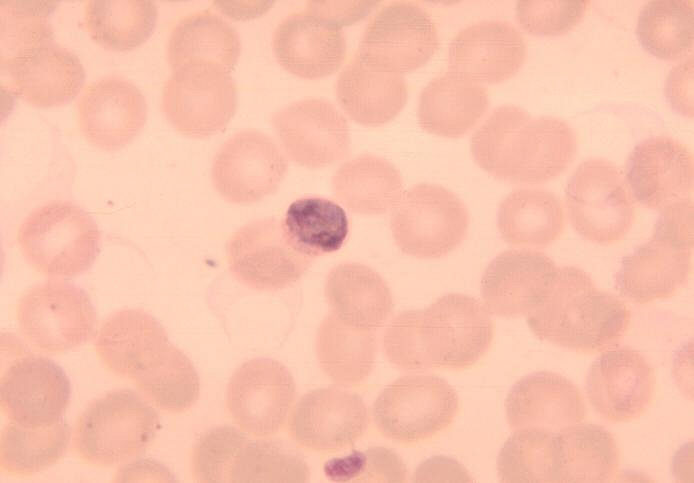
Blood smear showing young immature schizont of Plasmodium malariae.